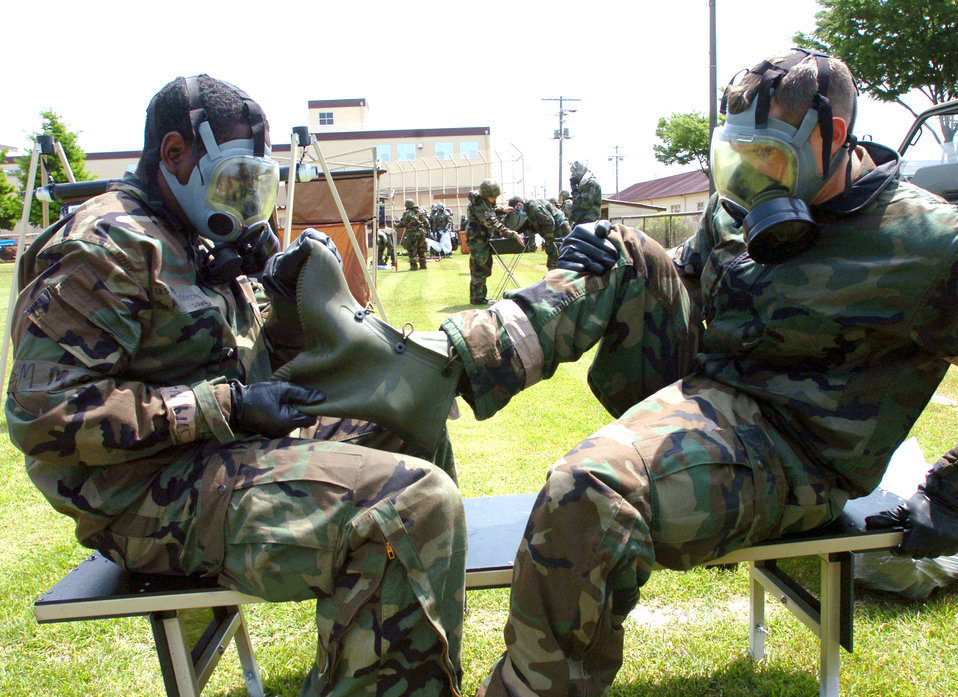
Civil engineers train for chemical attacks

YOKOTA AIR BASE, Japan -- Airmen from the 374th Civil Engineer Squadron remove their protective overboots at the contaminated control area during